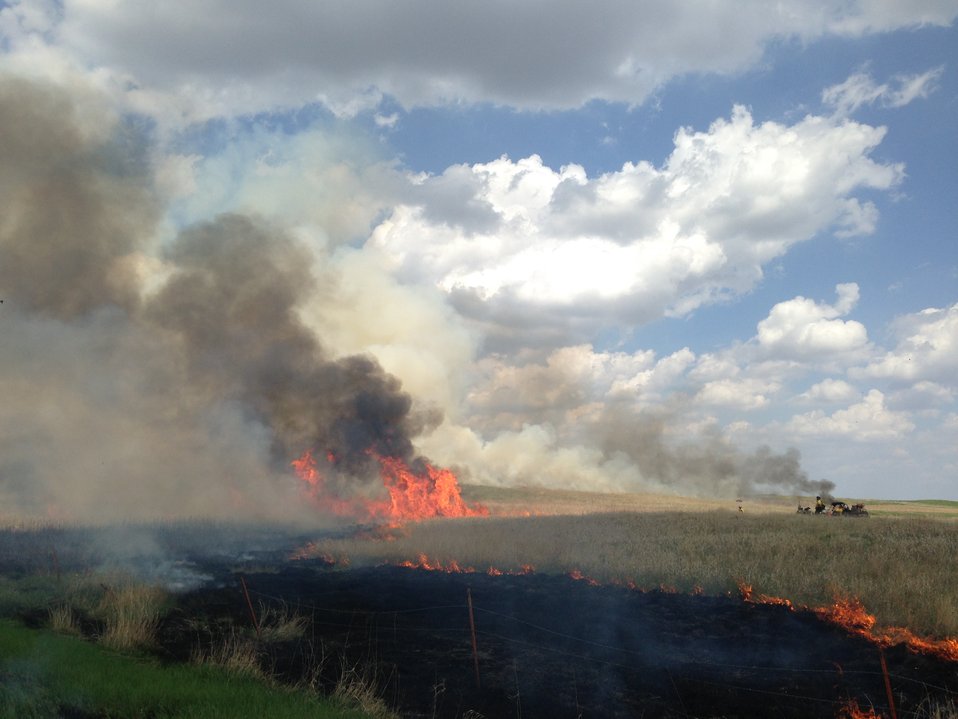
Overseeing a Prescribed Fire

Firefighters look on as the prescribed fire ignites cattails along the edge of a wetland.

Prescribed fire is a management tool that is used to maintain the vigor of a prairie. As with grazing, native prairie plants adapted to the frequent fires that raged across the Great Plains. These fires were historically started by lightning strikes and burned many miles of uninterrupted prairie. Fire is one of the best management tools for weakening non-native species. It removes the accumulated litter layer, stimulates new plant growth, and can be used to prepare ground for restoration.